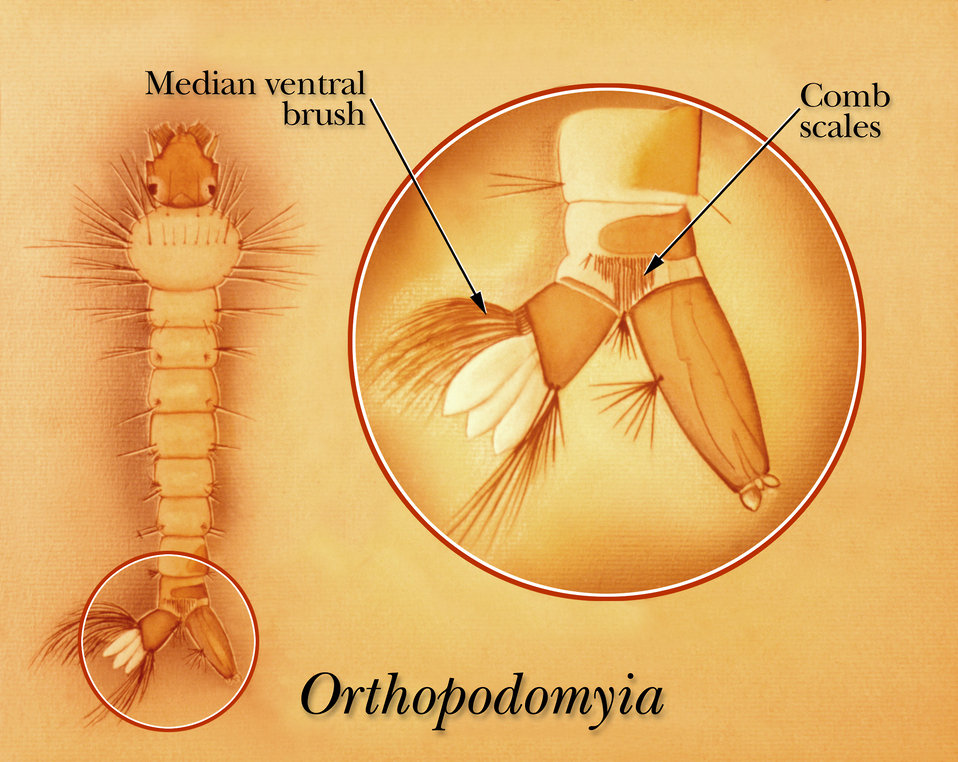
An illustration identifying comb scales and median ventral brush of an Orthopodomyia mosquito larva.